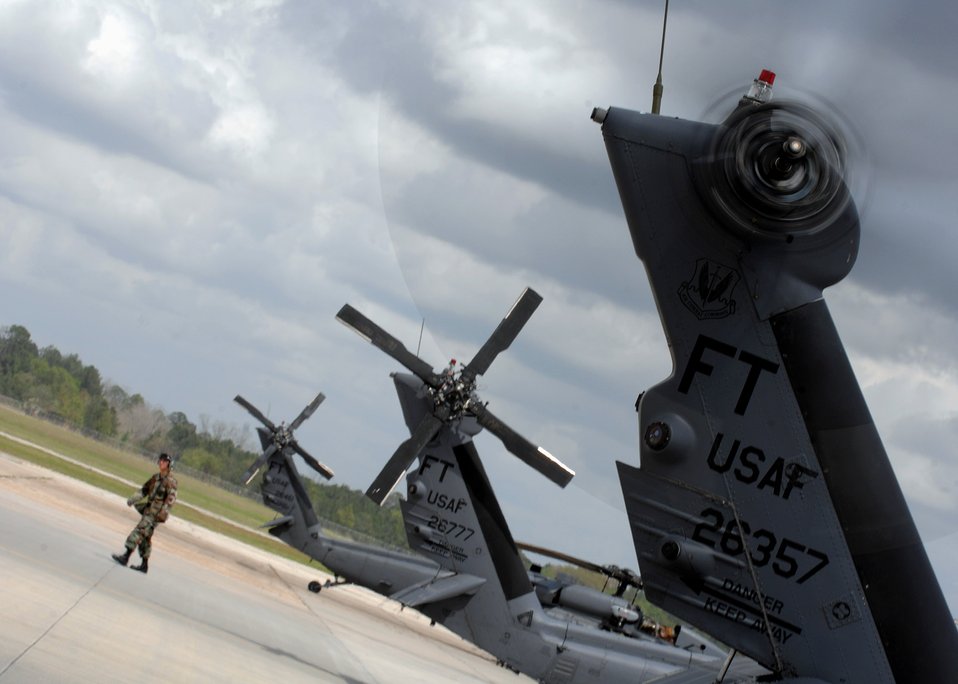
HH-60G Pave Hawk

An Airman walks off the flightline at Moody Air Force Base, Ga., April 1 while a 41st Rescue Squadron HH-60G Pave Hawk helicopter prepares for take off. Pave Hawks are frequently tasked for rescue missions, emergency aero-medical evacuation, disaster relief, international aid and counter drug activities.